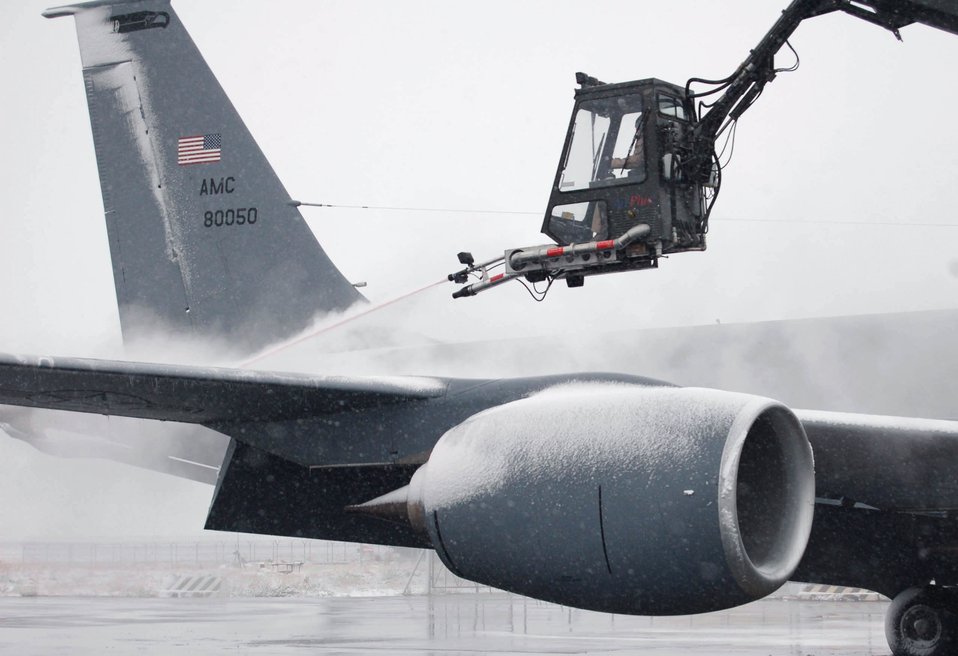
Winter comes to Manas

Senior Airman Ryan Saunders blasts the snow and ice off a KC-135 Stratotanker Nov. 21 at Manas Air Base, Kyrgyzstan, prior to the aircraft's next mission. This was the first snow of the season at Manas, home of the 376th Air Expeditionary Wing. The KC-135, deployed here from Fairchild Air Force Base, Wash., provides aerial refueling to aircraft flying over Afghanistan. Airman Saunders is deployed from the 92nd Aircraft Maintenance Squadron at Fairchild AFB.